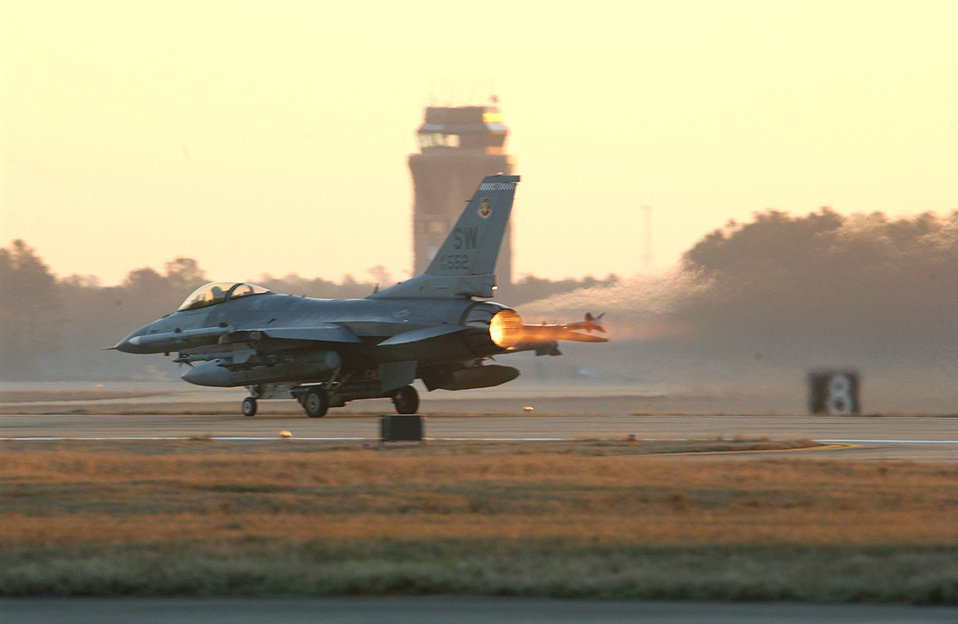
Sealion 06-07

SHAW AIR FORCE BASE, S.C (AFPN) -- An F-16 Fighting Falcon launches during phase one of the Sea Lion 06-07 exercise here Feb. 1. The F-16 is with the 55th Fighter Squadron.